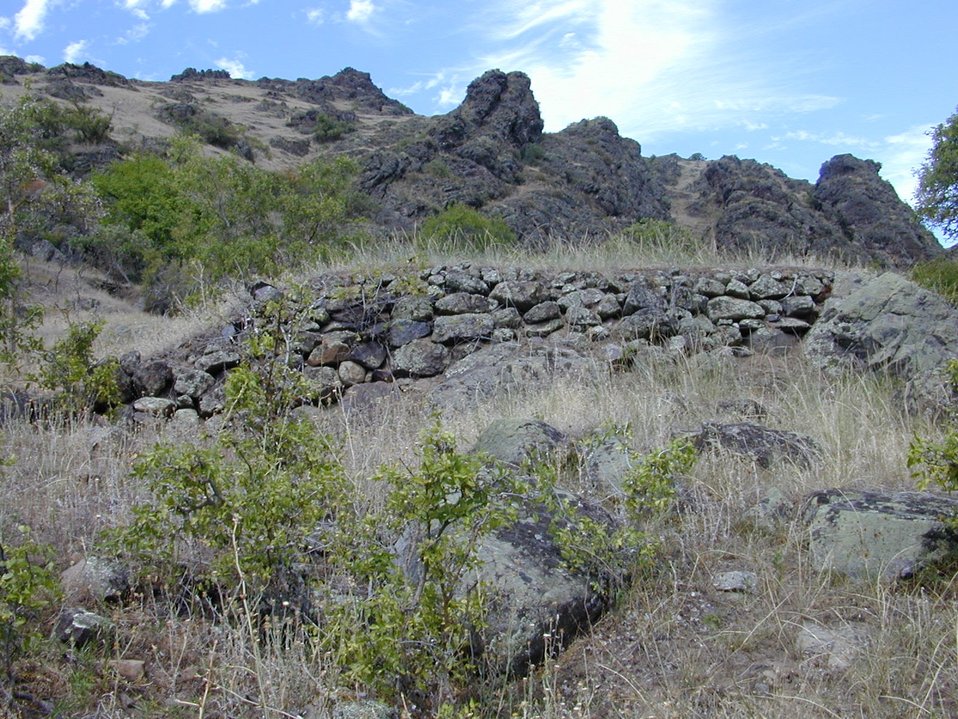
Hackberry Cottonwood Field Office UCSC Upper Columbia Salmon Clearwater Districtr